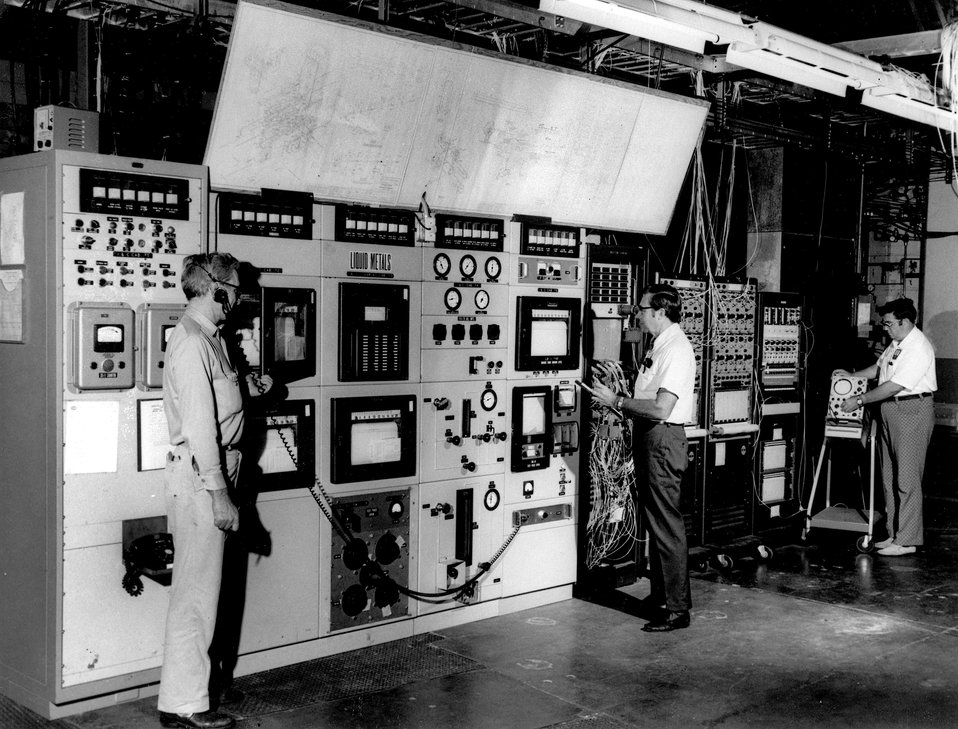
The U.S. Atomic Energy Commission's Oak Ridge National Laboratory is operating a test rig in support of the Liquid Metal Fast Breeder Reactor program. c. 1974